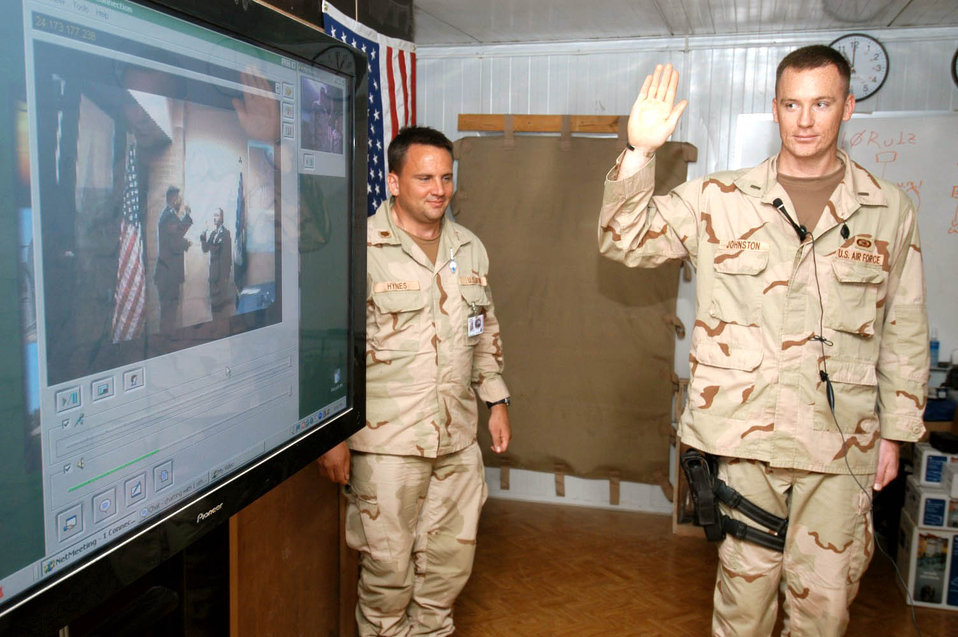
Promotion takes to airwaves

BALAD AIR BASE, Iraq -- Army Maj. Kenneth Hynes watches as 1st Lt. Eric Johnston repeats his oath given via video conference May 26 by Maj. Gary Barlet at Laughlin Air Force Base, Texas. Lieutenant Johnston, and his wife, 1st Lt. Sheila Johnston, were promoted together although they were separated by more than 7,000 miles. He and Major Hynes are assigned to the Combined Joint Special Operations Task Force-Arabian Pennisula here. Major Barlet is the 47th Communications Squadron commander at Laughlin, where the lieutenant is deployed from.